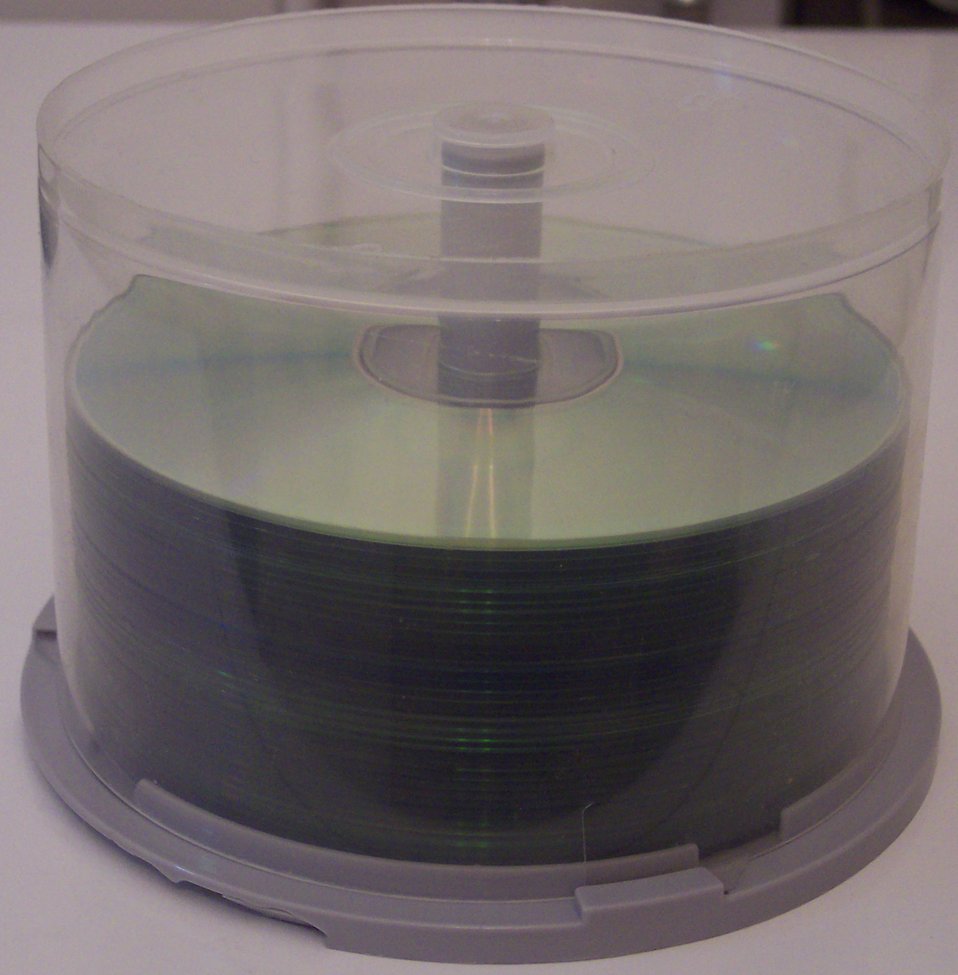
050er geschlossen